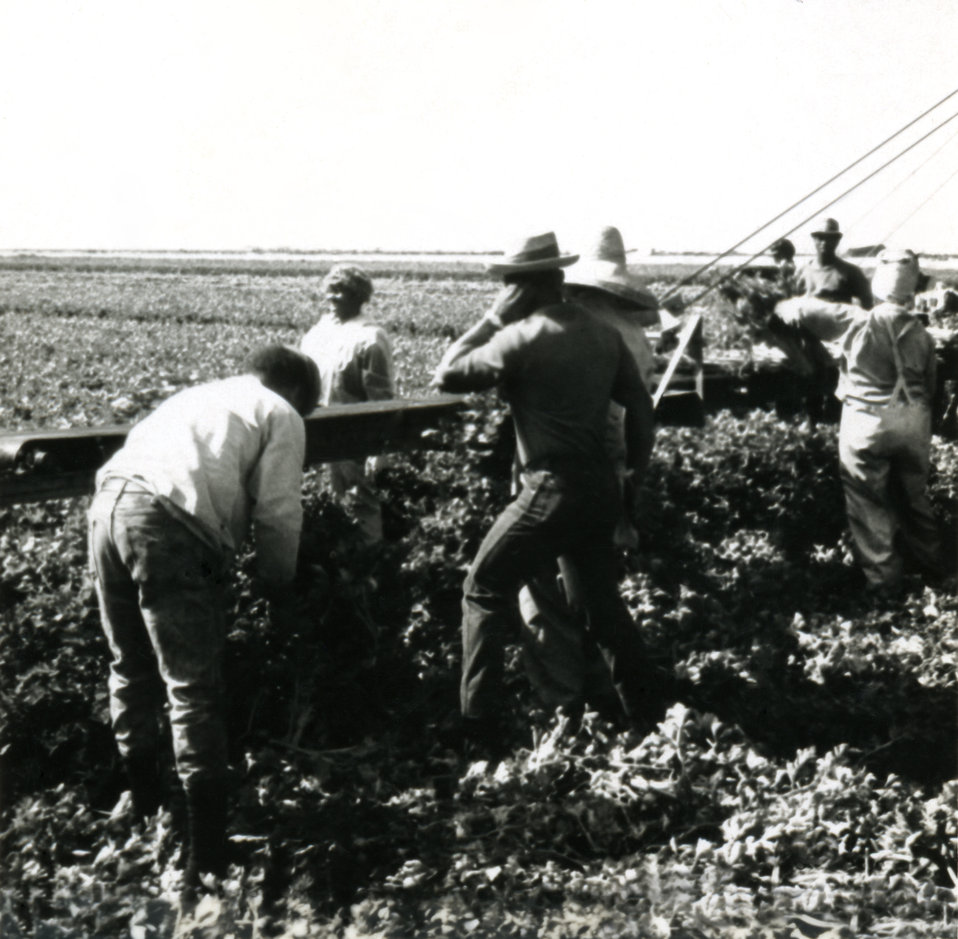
This 1950s historical photograph was provided by the Center for Disease Control's (CDC), National Institute for Occupational Safety and Health (NIOSH), and it depicted migrant field workers who were harvesting produce of an unknown crop. This type of physical labor is obviously rife with the potential for health hazards, including pesticide poisoning and overexposure. Public health investigation of these workers indicated that '...contaminated conveyer equipment and sprayed vegetables presented a high-frequency of health breakdown". This realworld scenario emphasized the need for a regulating body, which would mandate business owners to adhere to protocols that made the workplace a safe environment in all forms of commerce. See PHIL 8988 for another view of this scene.